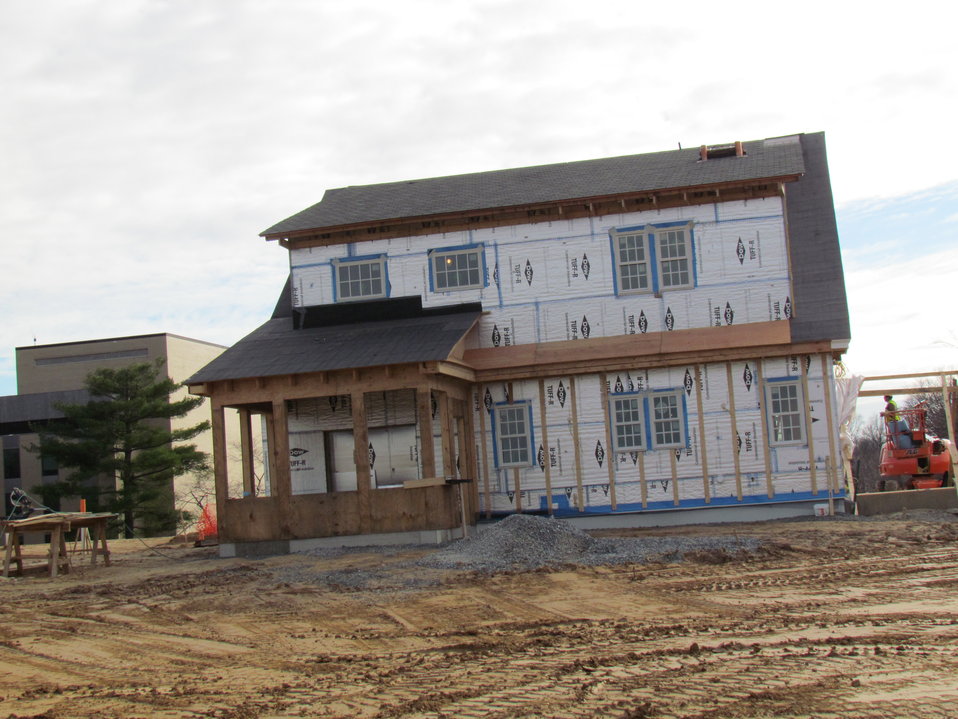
Net-Zero Energy Residential Test Facility – Photo of rear of facility with framing/sheathing for rear porch completed.